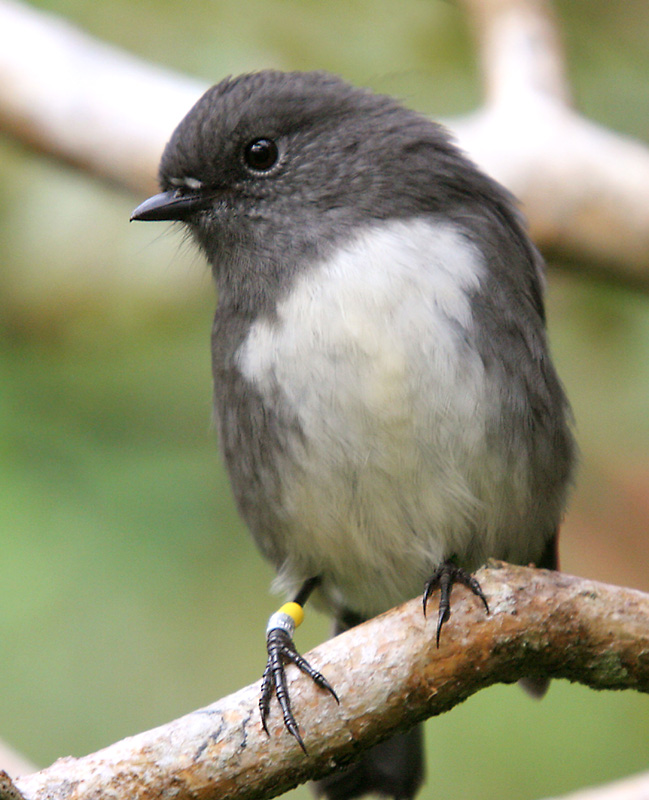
Petroica australis subsp. rakiura Stewart Island robin